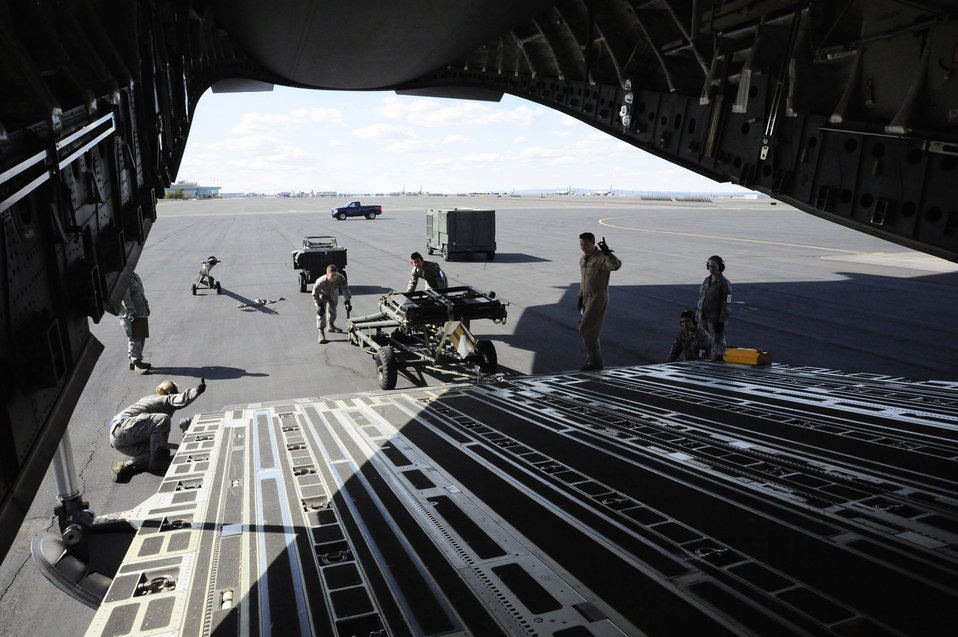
C-17 on a mission

Airmen load generators and other flight equipment onto a C-17 Globemaster III March 22, 2011, at the Grant County International Airport in Moses Lake, Wash., in preparation for a mission in support of Operation Odyssey Dawn.